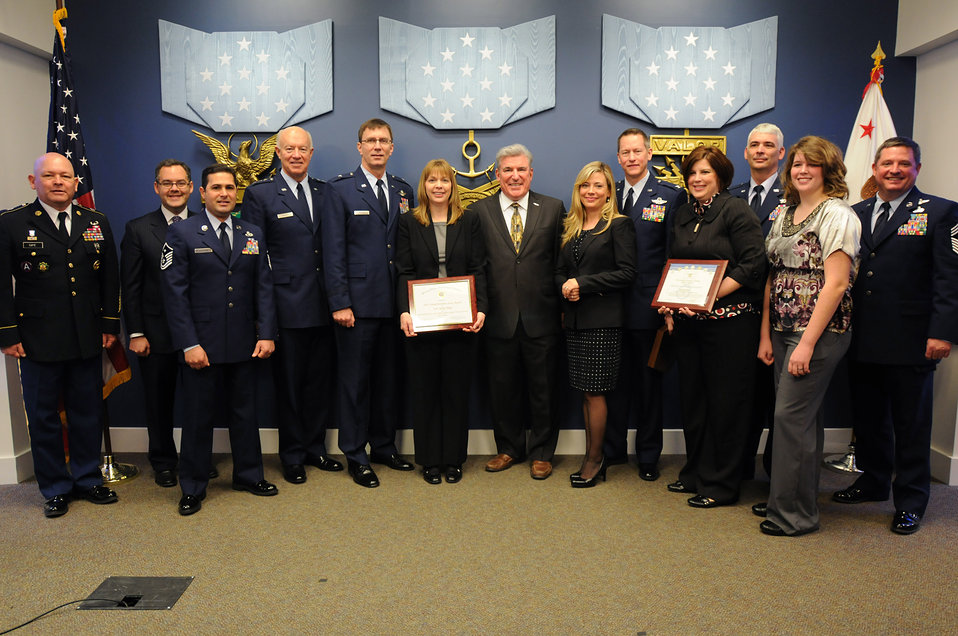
DoD top ANG family readiness program

Air Force Lt. Gen. Harry Wyatt, director of the Air National Guard (middle left), stands with Airmen from the 136th Airlift Wing, Texas National Guard, and unit Family Readiness Group members, during the 2012 Department of Defense Reserve Family Readiness Awards ceremony at the Pentagon Feb. 17, 2012. The 136th was recognized as having the top Air Guard FRG program.